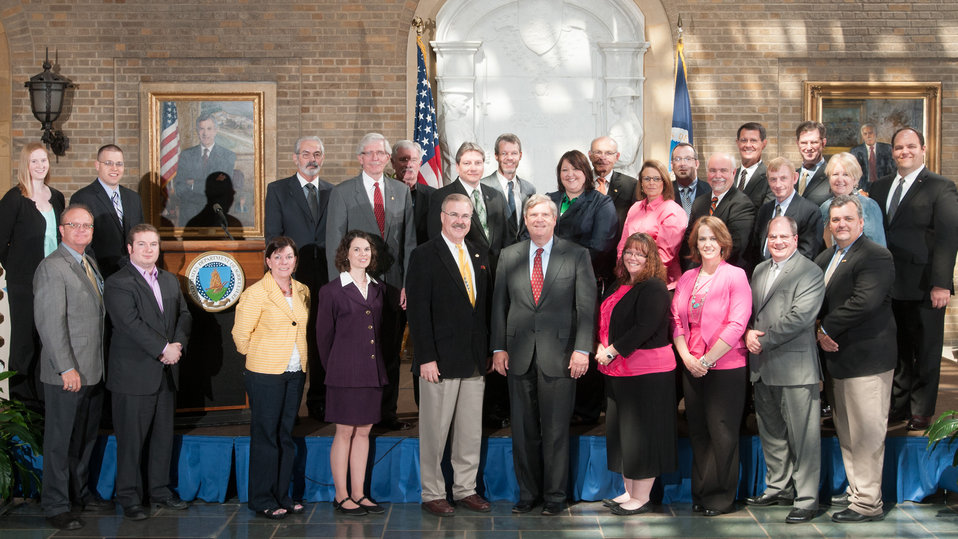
Agriculture Secretary Tom Vilsack meets with farm broadcasters at the U.S. Department of Agriculture (USDA) on Tuesday, May 14, 2013, in Washington, D.C.